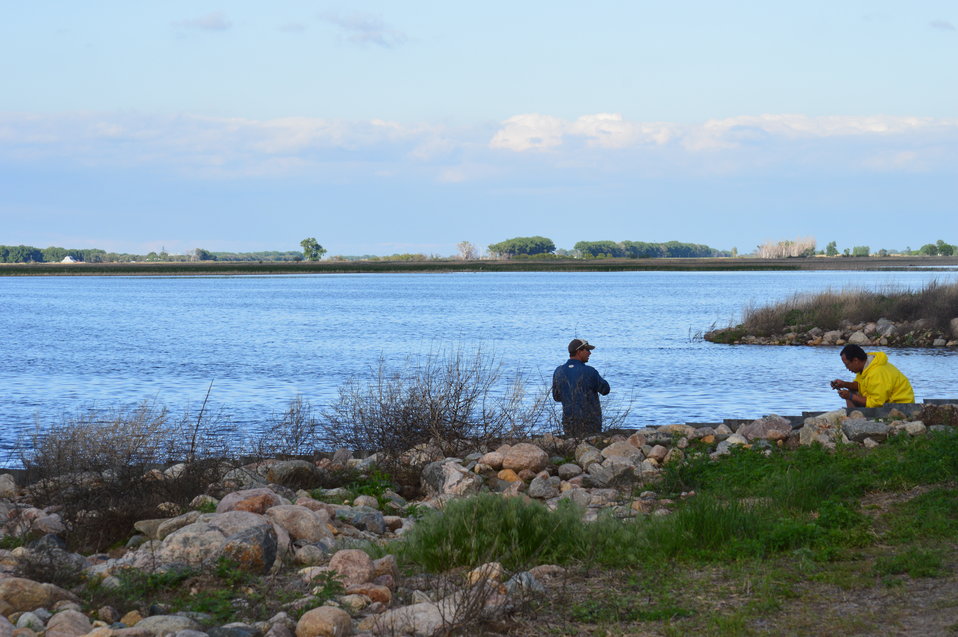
Fishing near the road at Sand Lake

Scenery and wildlife at Sand Lake National Wildlife Refuge in South Dakota